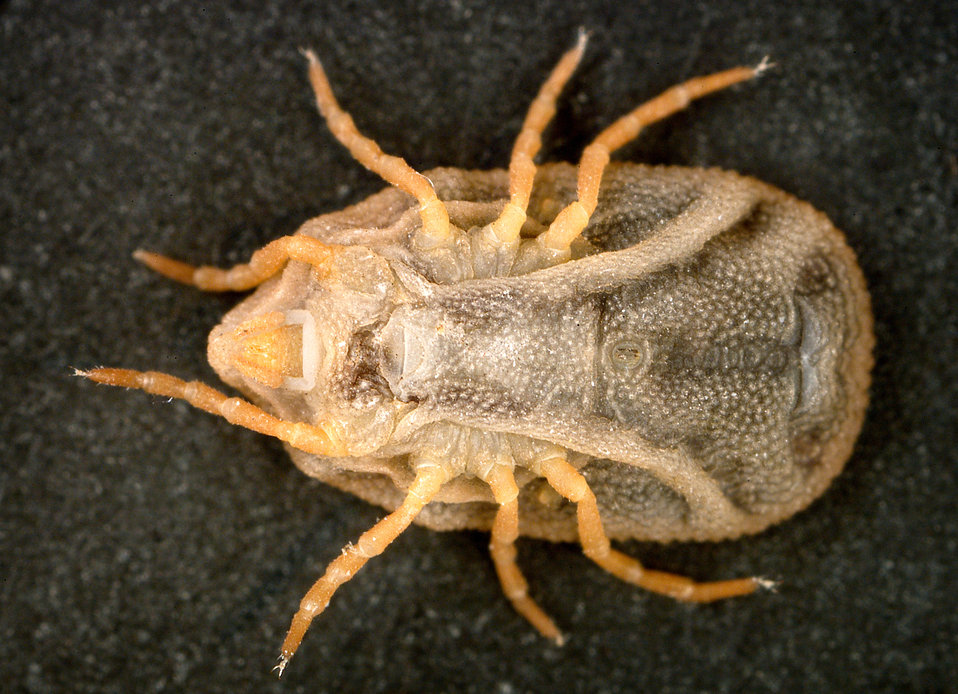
This is a ventral view of the 'soft tick' Carios kelleyi, formerly Ornithodoros kelleyi, or the 'Bat Tick'.